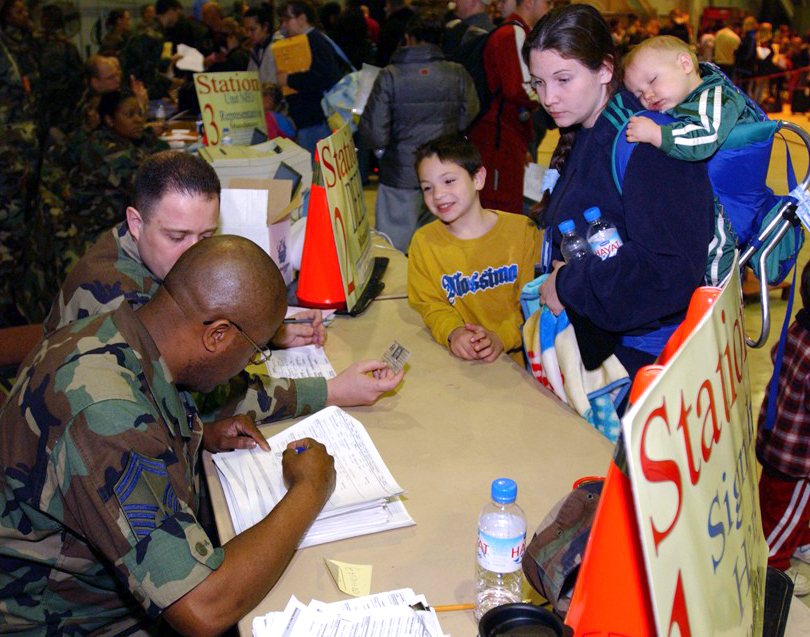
Processing line

INCIRLIK AIR BASE, Turkey -- Family members of 39th Wing airmen go through a processing line March 19 as part of Incirlik's voluntary dependent relocation. Representatives from various base agencies helped approximately 320 dependents leave the base. The first aircraft left Incirlik at 4:30 p.m. March 20.